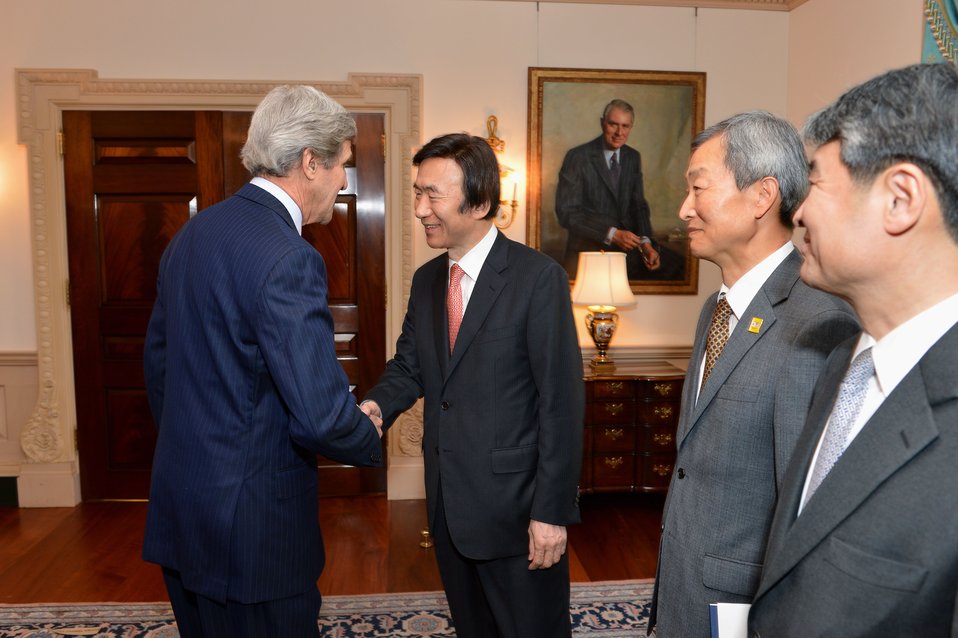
Secretary Kerry Greets Korean Foreign Minister Yun Byung-se

U.S. Secretary of State John Kerry shakes hands with Korean Foreign Minister Yun Byung-se before their bilateral meeting at the U.S. Department of State in Washington, D.C., on January 7, 2013.